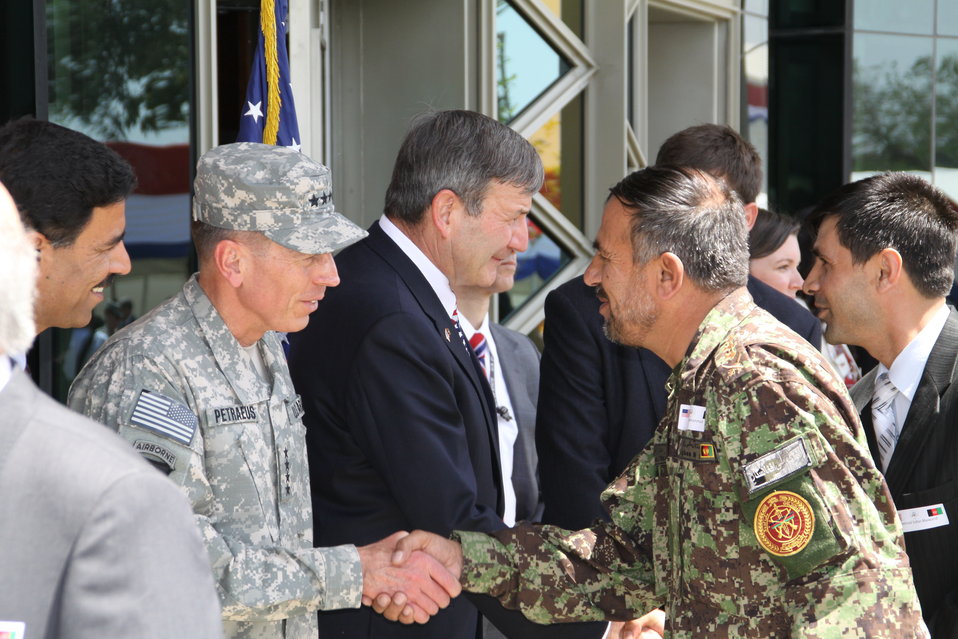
Kabul Official July 4th Celebration